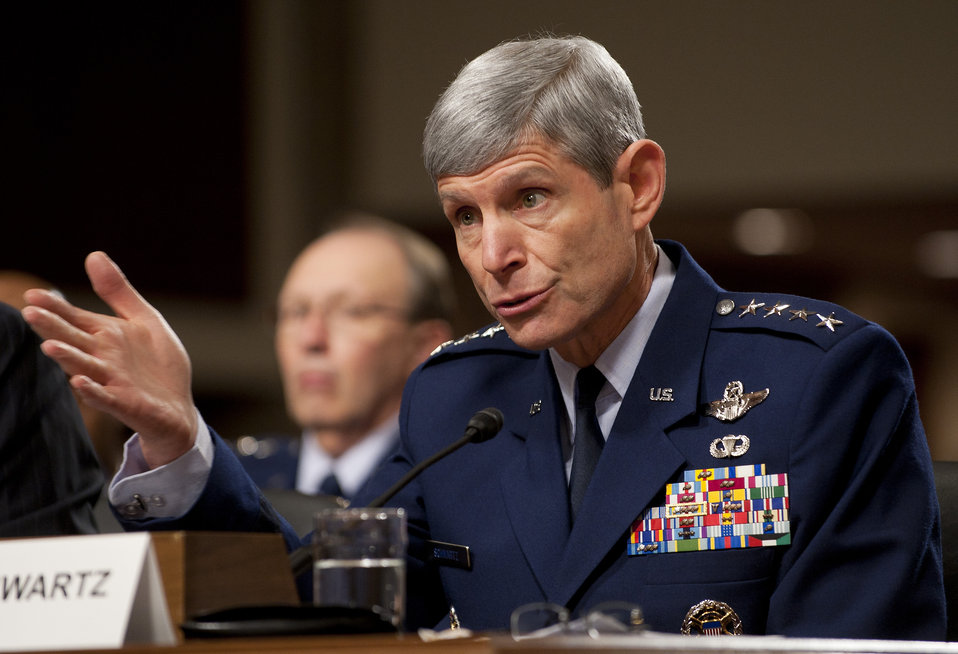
CSAF discusses force structure changes

Air Force Chief of Staff Gen. Norton Schwartz answers a question during a
hearing of the Senate Armed Services Committee, March 20, 2012, in
Washington, D.C. Both Schwartz and Secretary of the Air Force Michael Donley
were on Capitol Hill to discuss the Air Force's fiscal 2013 budget request
and the Future Years Defense Program.